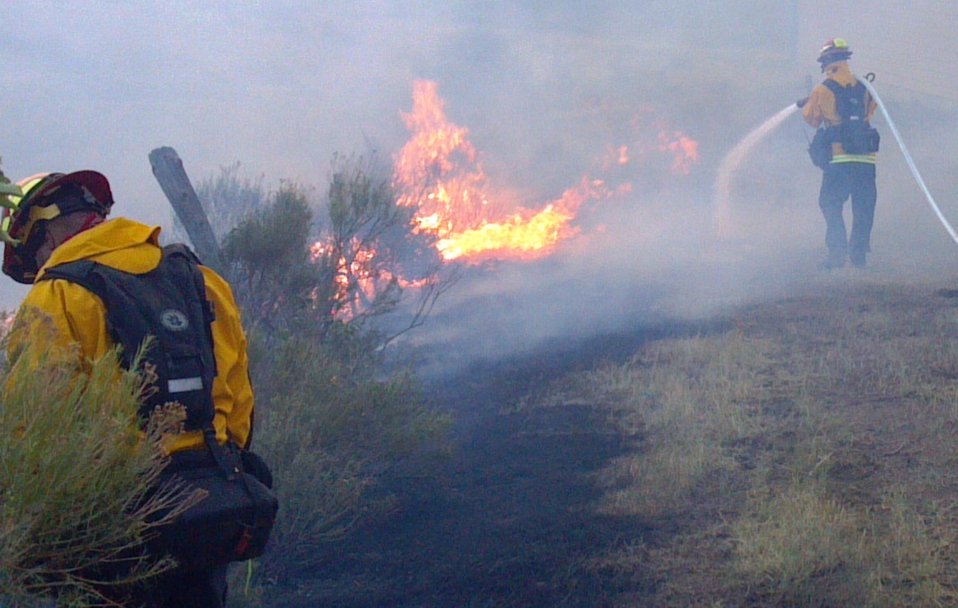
Firefighter wets down area in front of private home in effort to retard the advance of the High Park Wildfire on Thursday, June 10, 2012. The High Park Wildfire located approximately 15 miles west of Fort Collins, CO has consumed over 65,738 acres of forest and grassland with approximately 189 homes destroyed. Over 1,773 personnel from the U.S. Forest Service (FS), state and local resources are fighting the wildfire and have achieved 55% containment as of June 20, 2012. The High Park Wildfire began on June 9. 2012 because of a lightening strike on private land.